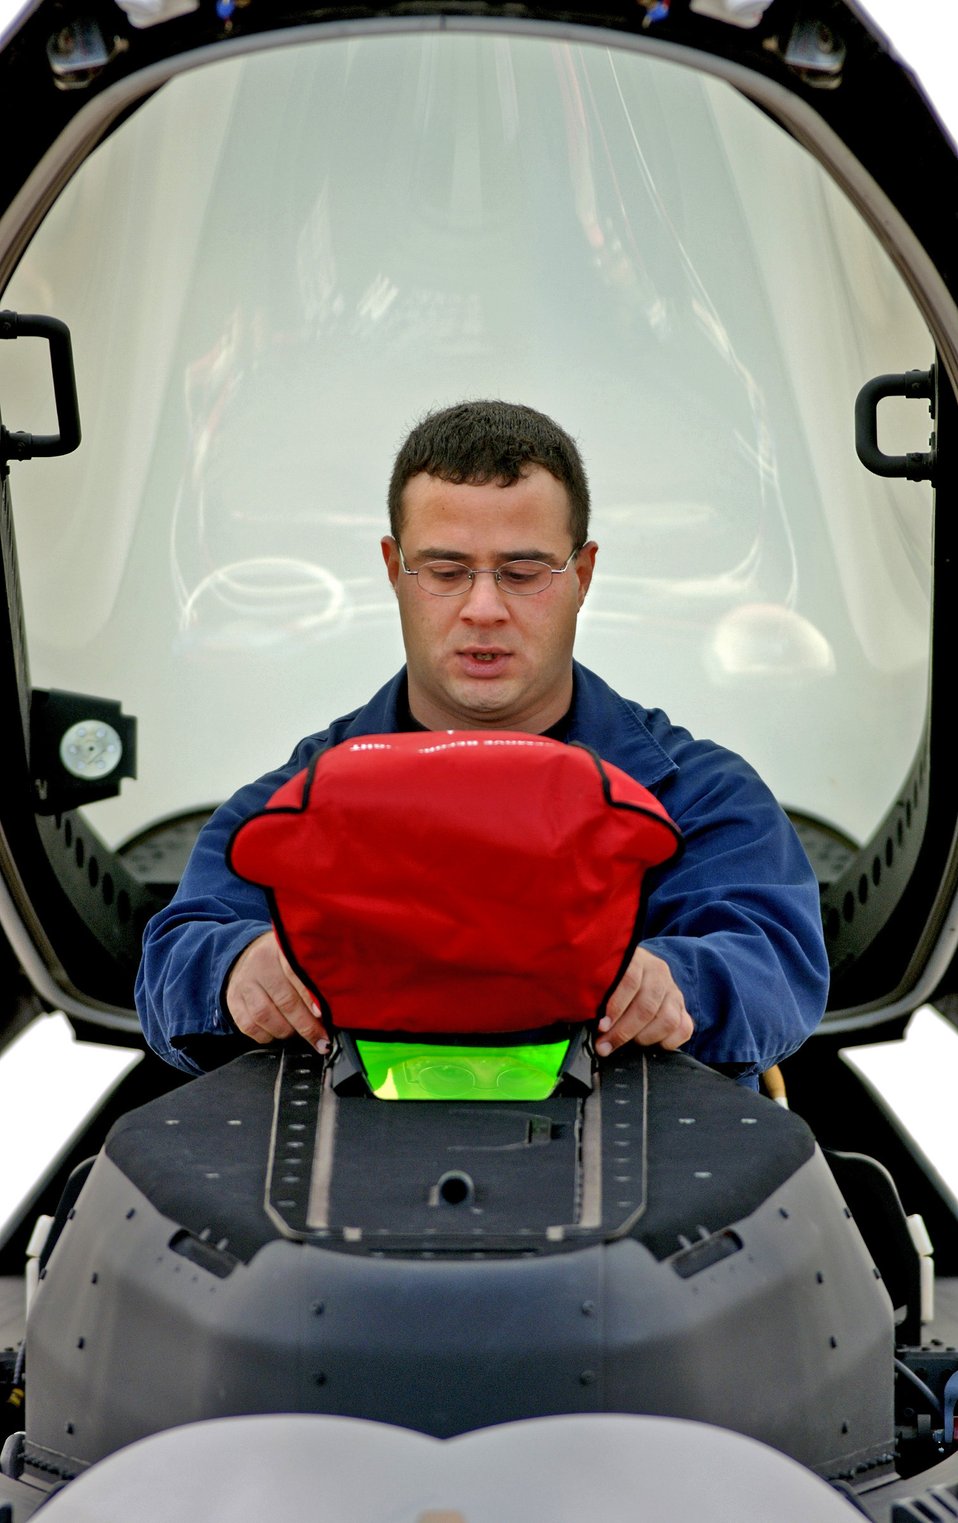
Raptor post-flight

LANGLEY AIR FORCE BASE, Va. (AFPN) -- Airman 1st Class John Korkian does a post-flight inspection of an F/A-22 Raptor here after it returned from Hill Air Force Base, Utah. The 27th Fighter Squadron just completed its first aircraft deployment giving pilots valuable